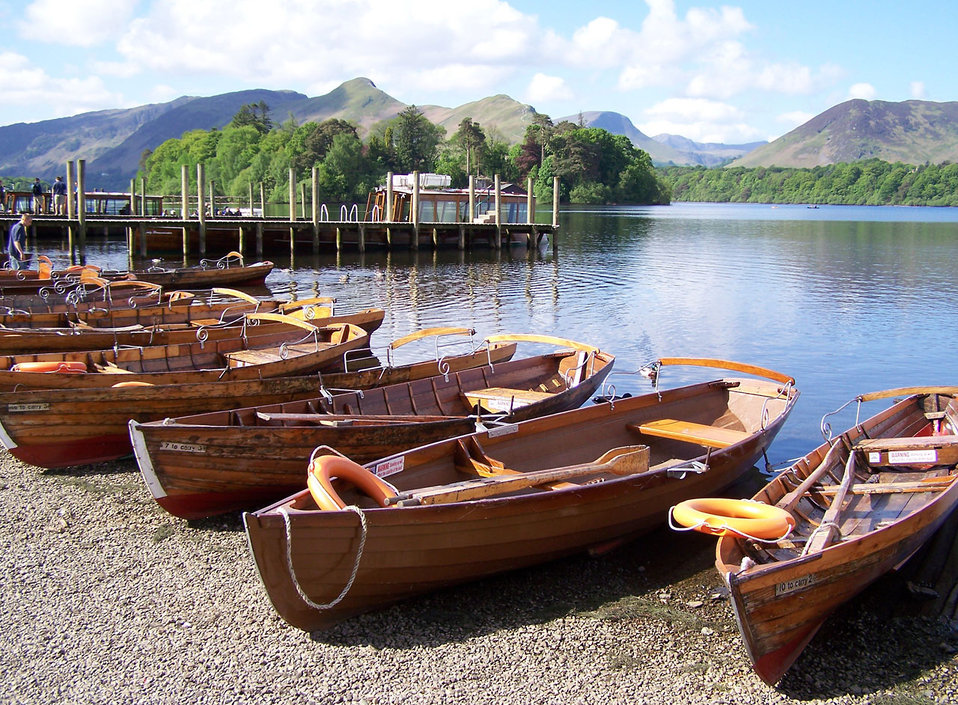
Derwentwater

Rowing boats at lake dewentwater.